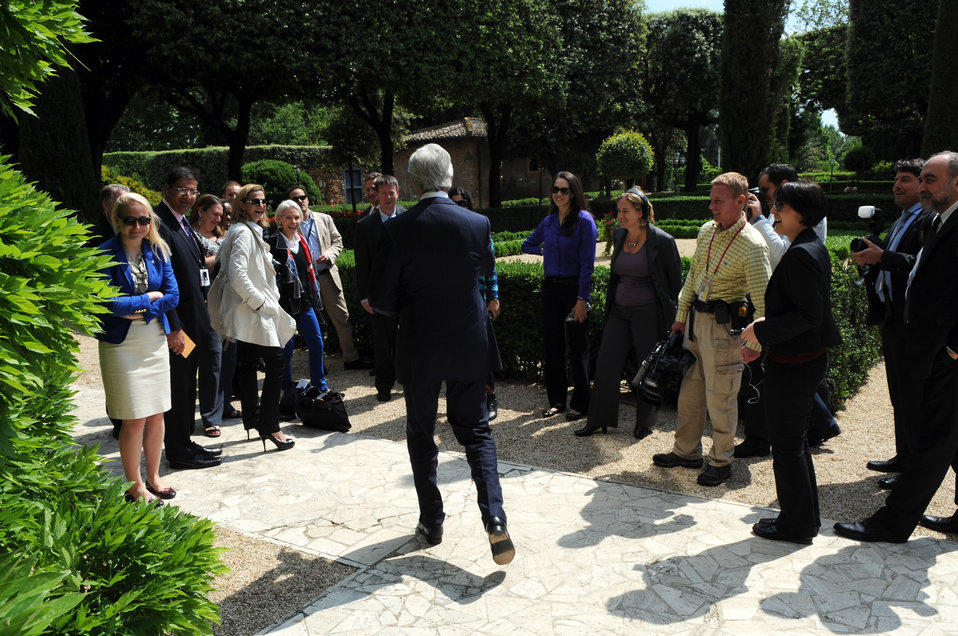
Secretary Kerry Surprises the Traveling Press Corps With Italian Cookies

Members of the traveling press corps laugh as U.S. Secretary of State John Kerry surprises them with a plate of Italian cookies as they wait for a statement at the U.S. ambassador's residence, the Villa Taverna, in Rome, Italy, on May 8, 2013.